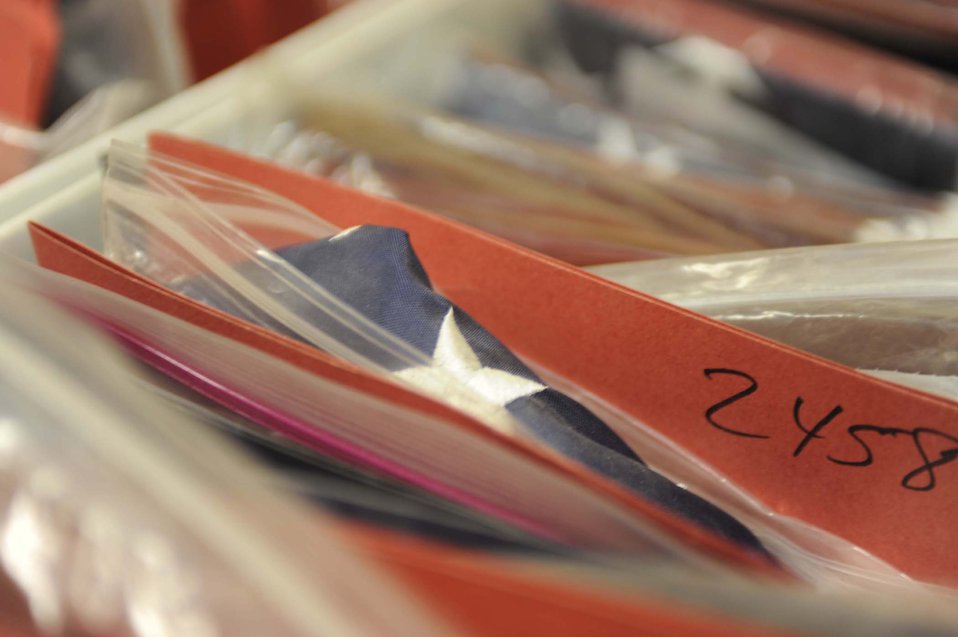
451st AEW members give flags wings to fly

Flags are packed tightly in boxes waiting to be flown on 451st Air Expeditionary Wing aircraft Feb. 12, 2011, at Kandahar Airfield, Afghanistan. Flags from all countries, sports teams, and schools may be flown as part of the 451st AEW flag flying program.